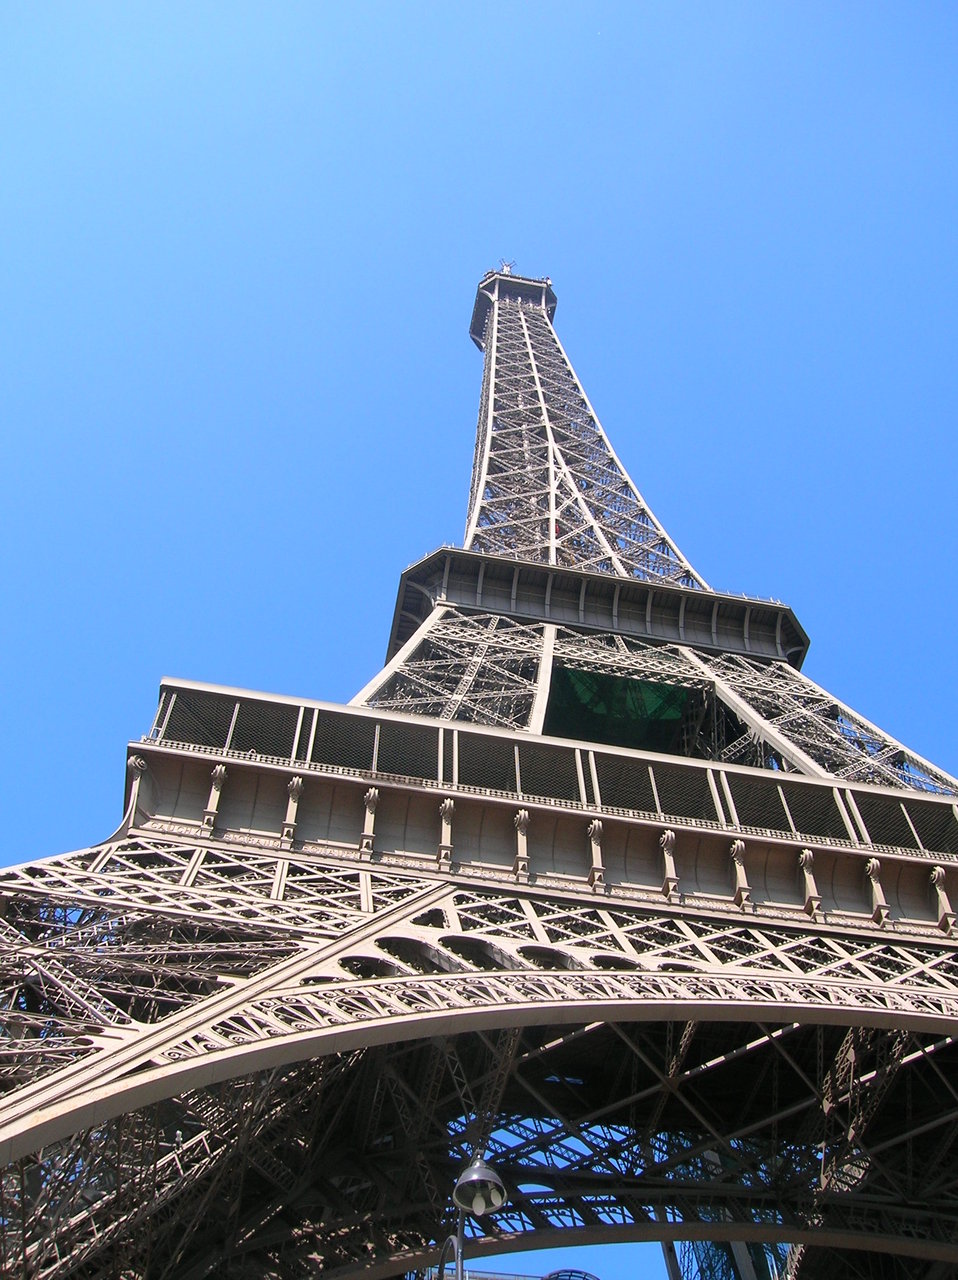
Eiffel Tower, in Paris. Fran√ßais†: Tour Eiffel, √† Paris.